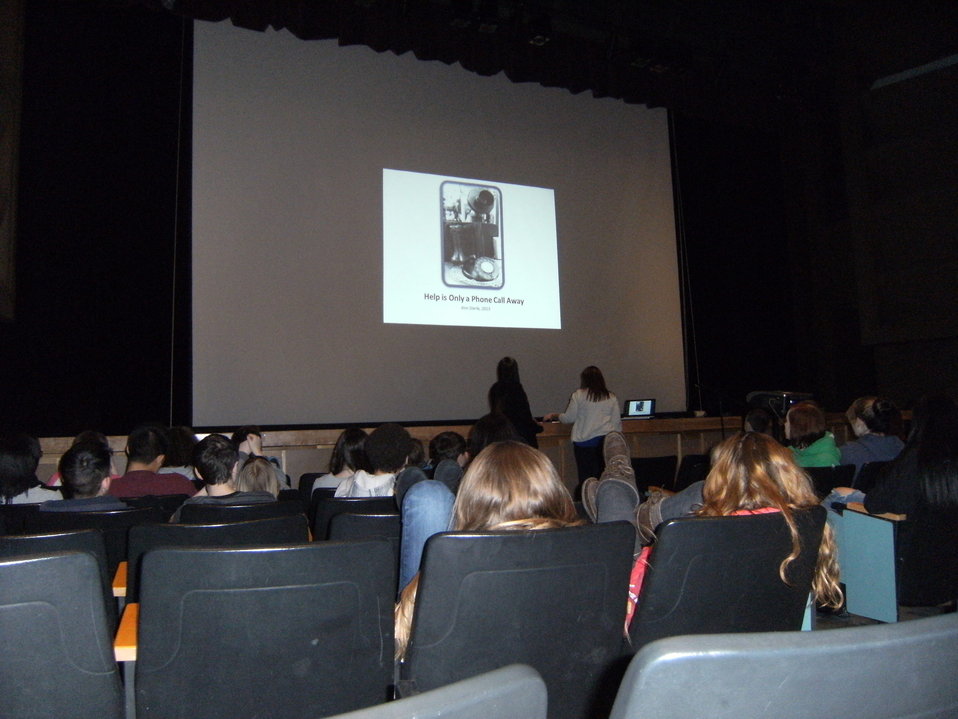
Lathrop Teen Shattering the Myths

Students Against Destructive Decisions (SADD)
presented an assembly with guest speaker Amy Bollaert, Coordinator of the Fairbanks Prevention Coalition, as part of SADD's 'Signature Events' program in Fairbanks, Alaska